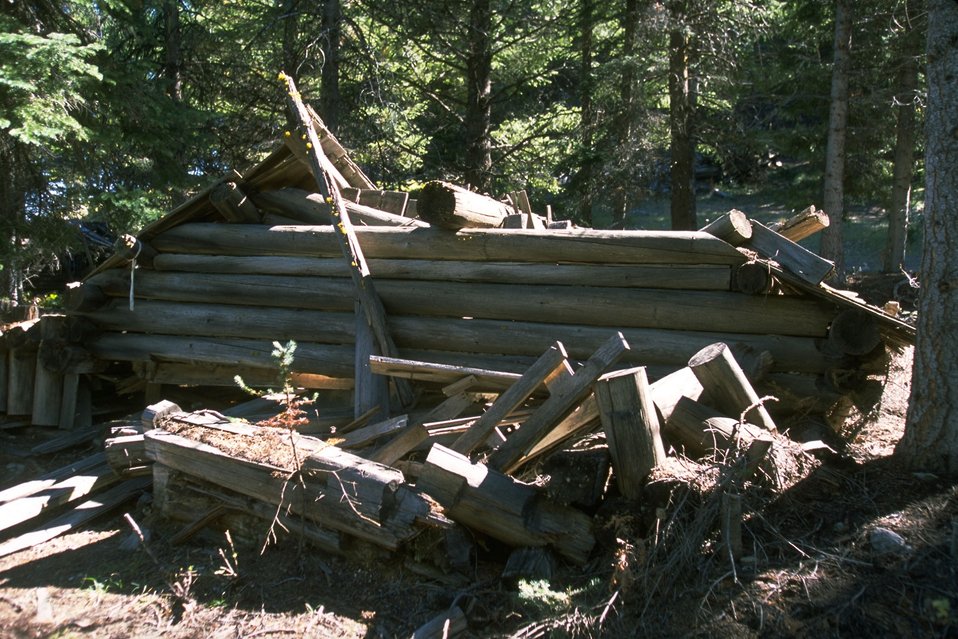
Coloma Ghost Town-collapsed cabin